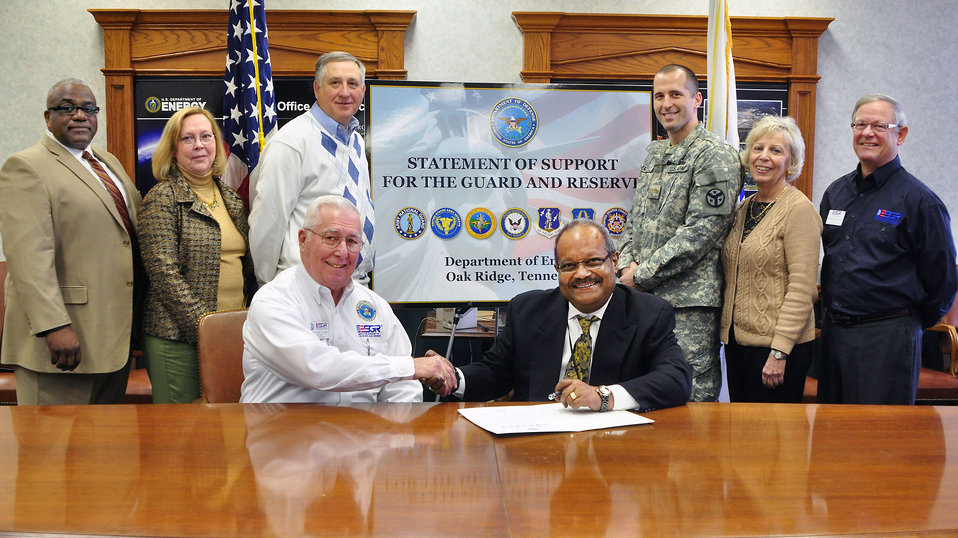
DOE-ORO Manager Larry Kelly, accompanied by retired Major General Jack D’Araujo, ESGR Tennessee Area Chair, recently signed a Statement of Support with Department of Defense (DOD) Committee for Employer Support of Guard and Reserve (ESGR) enhancing ORO

14-021 DOE photo Lynn Freeny 2-10-2014 (left to right standing) DOE-ORO employee and Veteran Support Group Manager Ballard Jackson; Tammie McDuffie, Chief, Financial Systems and Reporting Branch, DOE-ORO; Hughie Thomas, Director, DOE Oak Ridge Financial Service Center; Officer Candidate and DOE-ORO employee Michael Easterly; Judy Penry, Chief Financial Officer, DOE-ORO; retired Brigadier General Jim Mungenast, Vice Chair for Tennessee’s DOD Committee for ESGR organization; (left to right seated) retired Major General Jack D’Araujo, ESGR Tennessee Area Chair; and DOE-ORO Manager Larry Kelly. Oak Ridge Tennessee